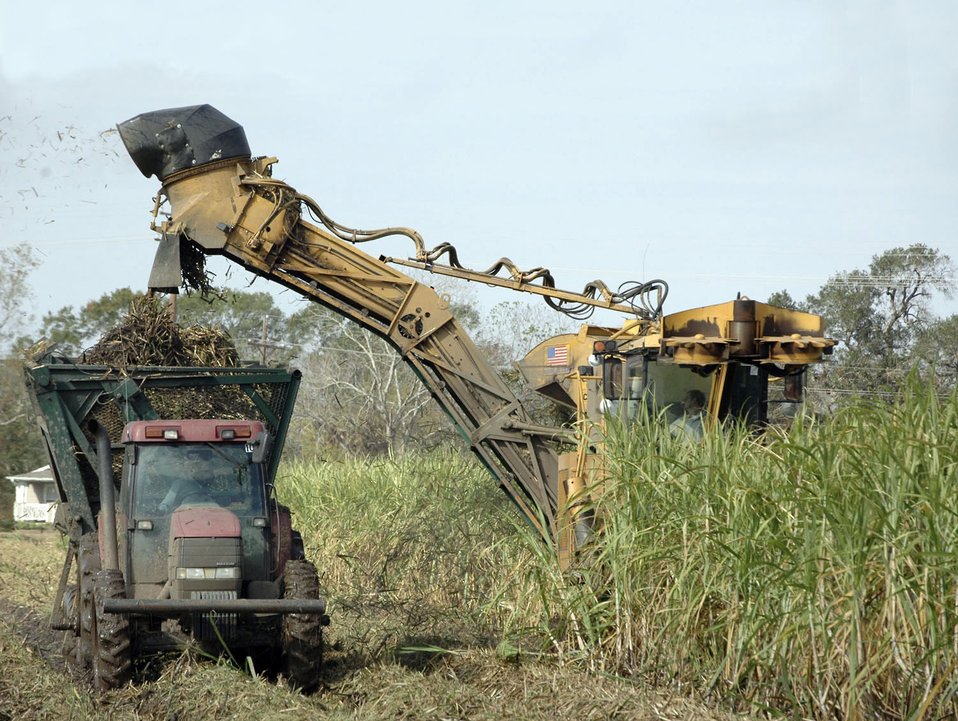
Reservist, his family find sweet success raisin' cane

Kent Roberts operates a combine to harvest sugar cane in St. Martinville, La.